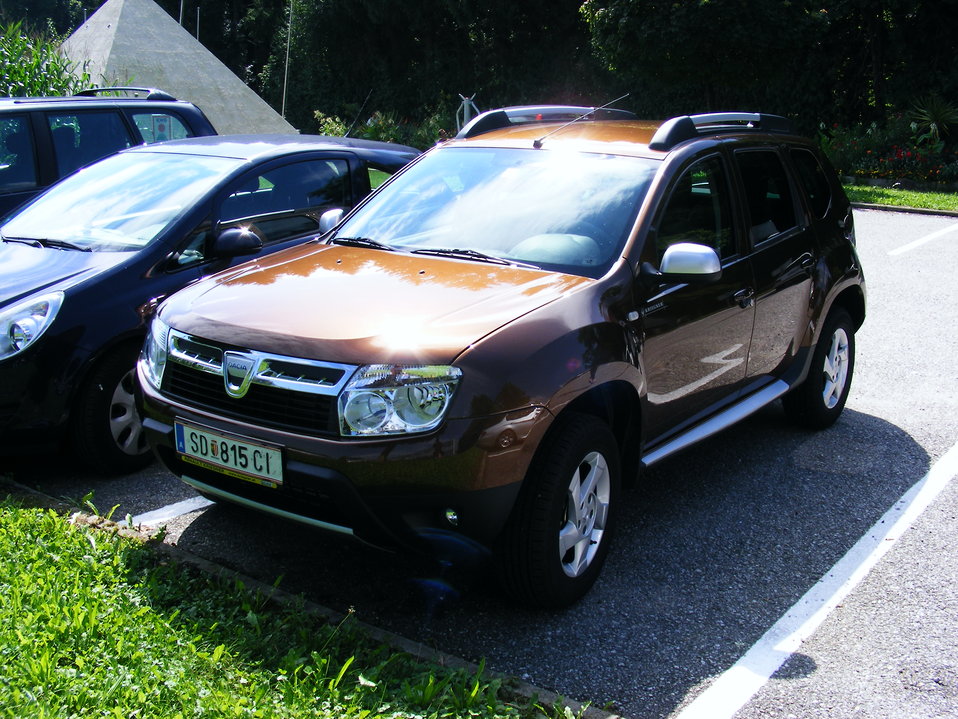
Dacia Duster - dark copper